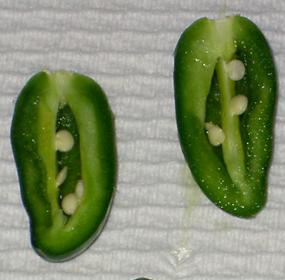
Small Jalapenyo slices